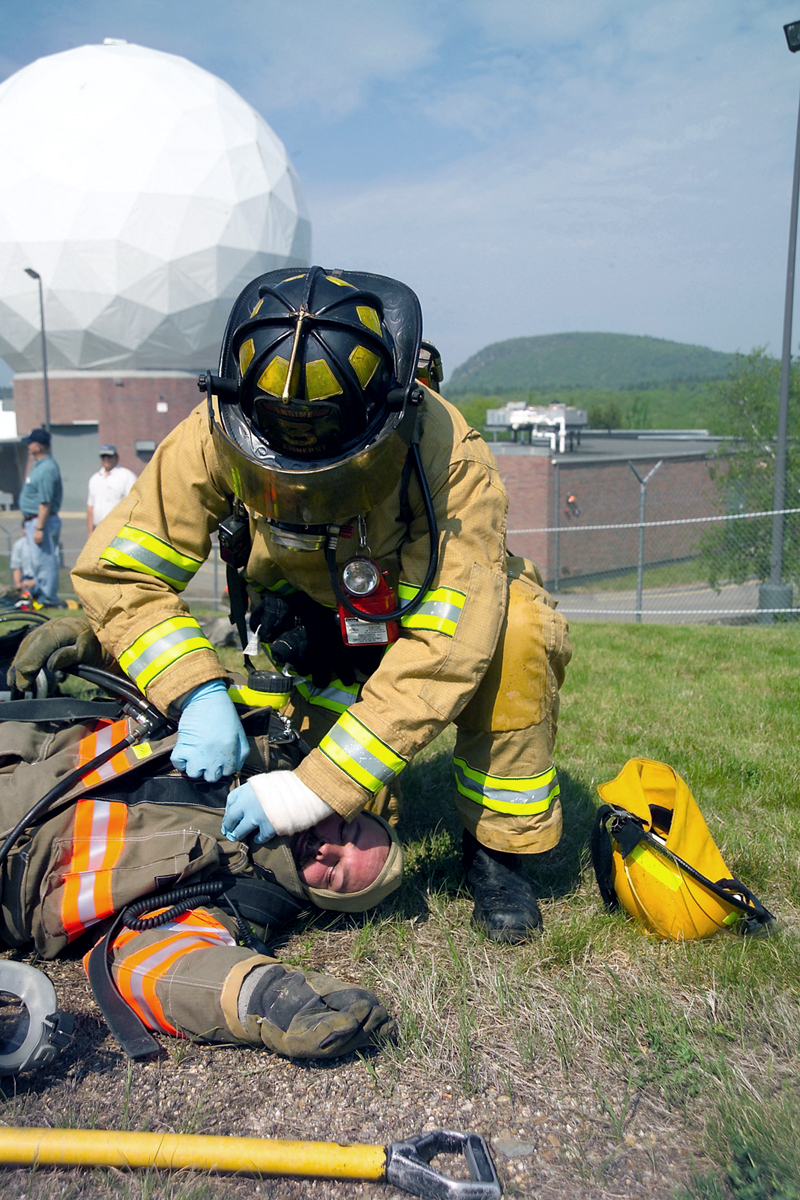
Granite Thunder 2004

NEW BOSTON AIR FORCE STATION, N.H. -- A firefighter from nearby Amherst starts decontaminating a fellow firefighter exposed to a